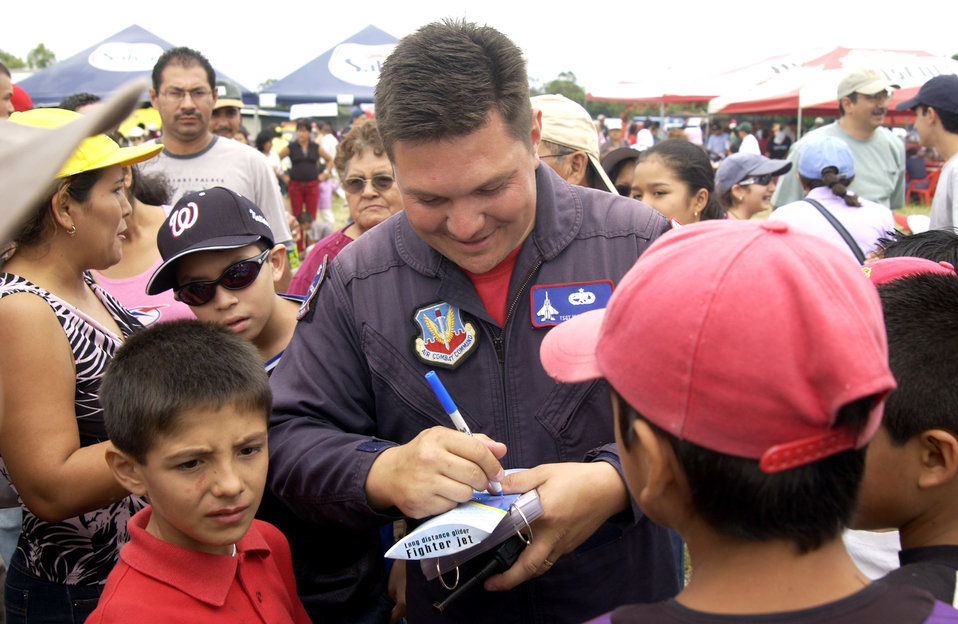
Airmen bring Airpower to San Salvador

ILOPANGO AIR BASE, El Salvador (AFPN) --Tech. Sgt. Michael Camp, a member of the Air Combat Command's F-15 West Coast Demontration Team from Eglin Air Force Base, Fla., signs autographs during the Ilopango Air Show 2005 in El Salvador Oct. 30. Sergeant Camp is the team's avionics expert.